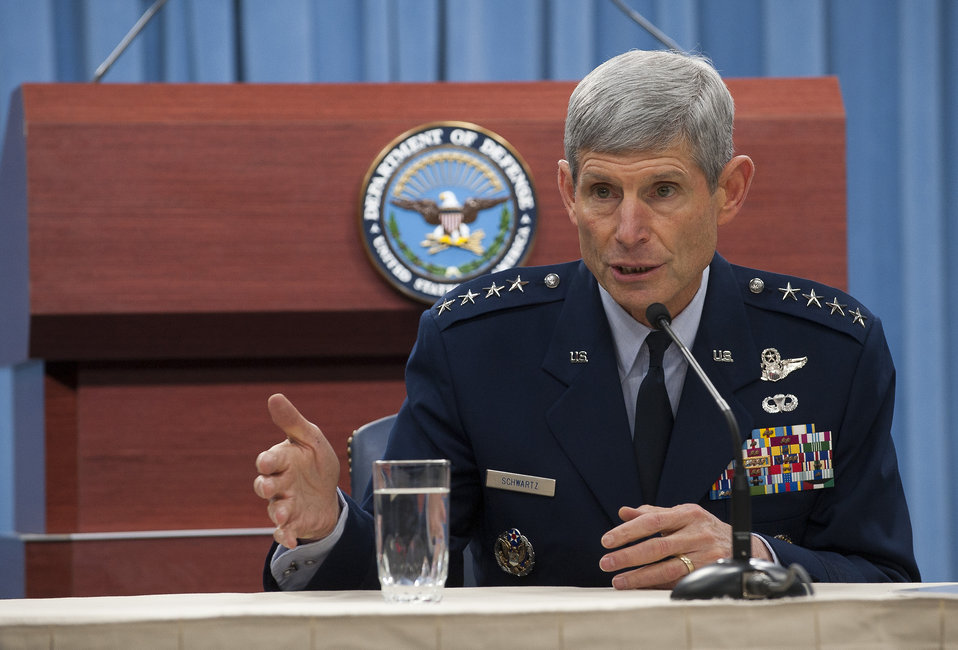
Air Force chief of staff reflects

Air Force Chief of Staff Gen. Norton Schwartz responds to questions in the Pentagon on July 24, 2012, during a media availability to discuss Air Force accomplishments during his time as Chief of Staff.